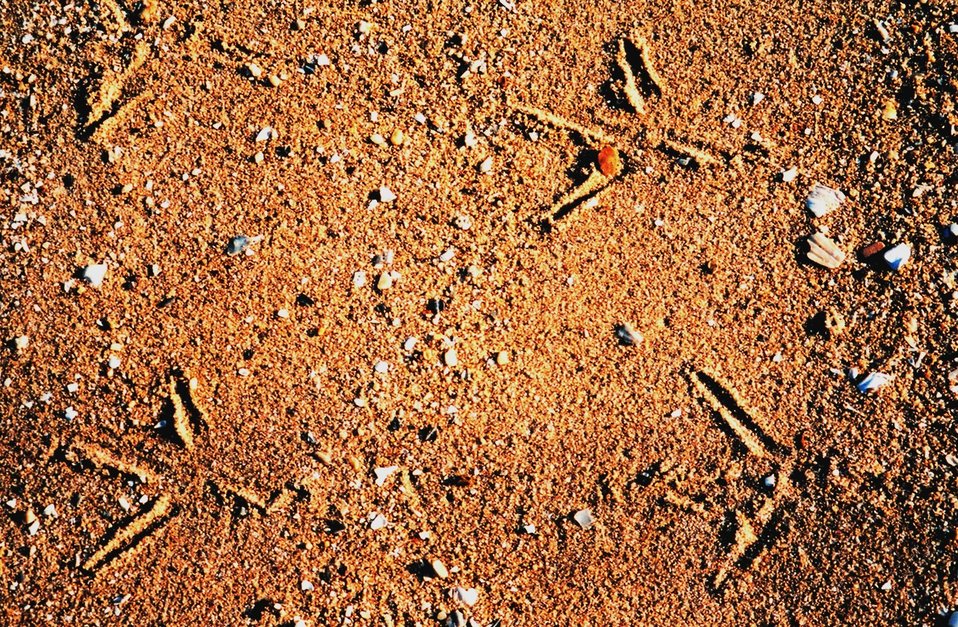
Footprints in the sand. A Great Blue Heron has left its tracks here along the river. Compare the sand texture in this picture to the previous image.